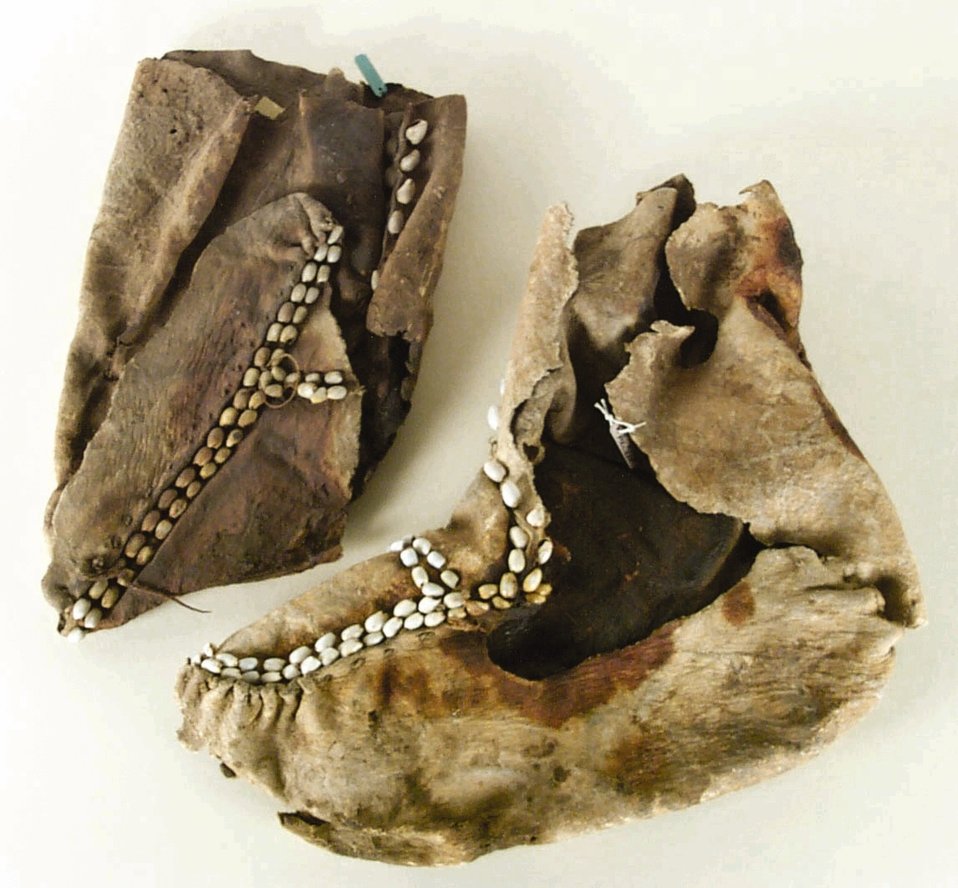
Buckskin moccasins 240 mm for toe to heel